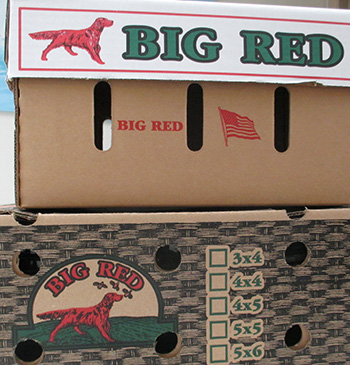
RECALLED – Tomatoes

February 7, 2014 – Product Recall – Big Red Tomato Packers, LLC Voluntarily Recalls Fresh Tomatoes Due to Possible Risk of Contamination from Salmonella.